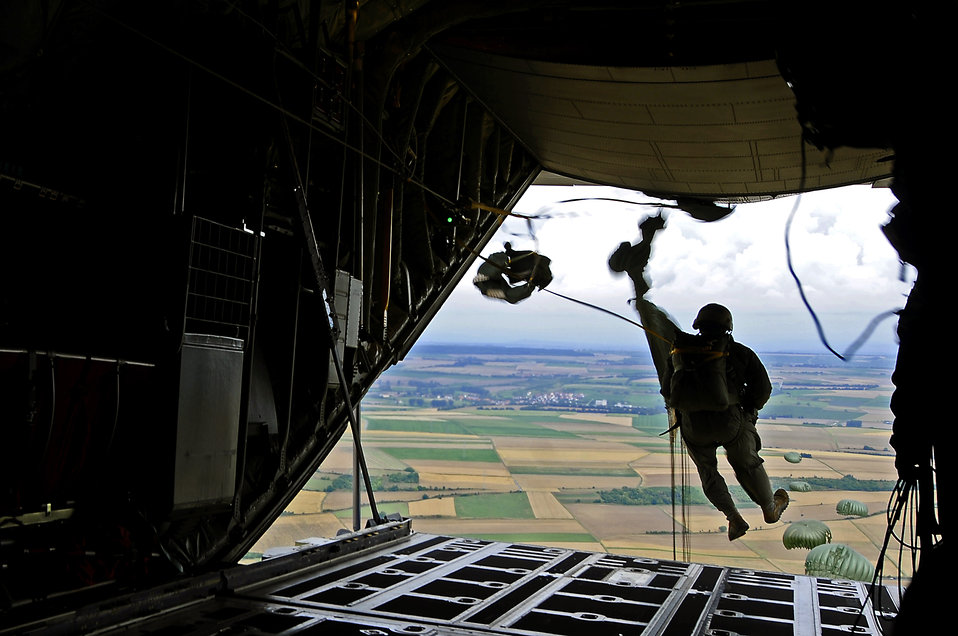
Taking a walk...

An Air Force paratrooper jumps from a C130J Super Hercules Aug. 5, 2010, over Marnheim, Germany. The combined U.S. forces airborne jump was conducted to maintain proficiency and to inspire esprit de corps among paratroopers.